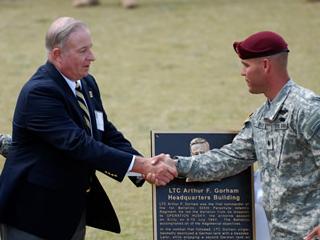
Dedication of the Arthur F. Gorham Headquarters Building